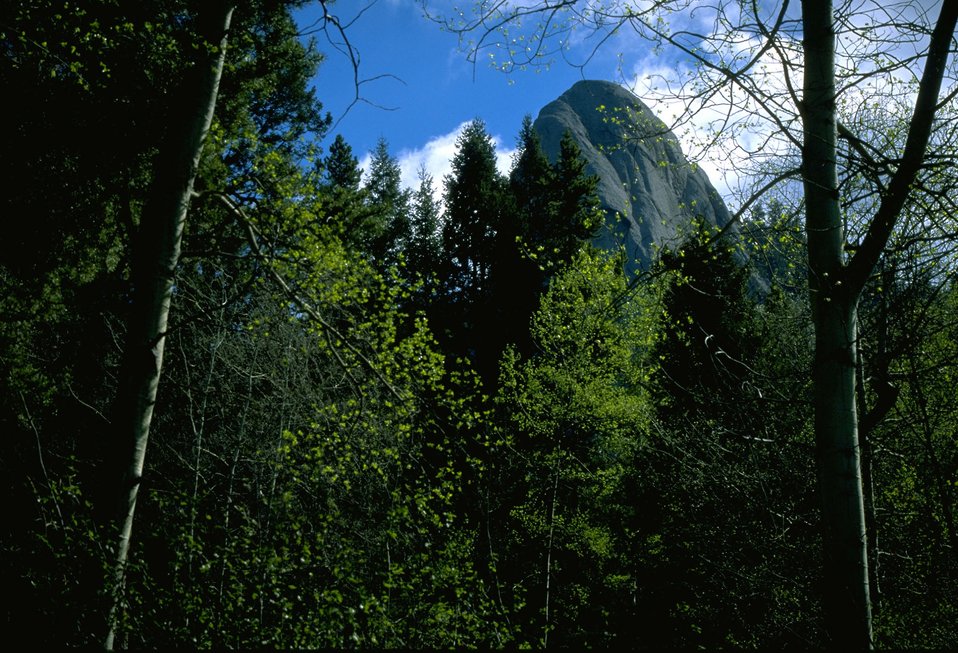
Rock formation above the trees